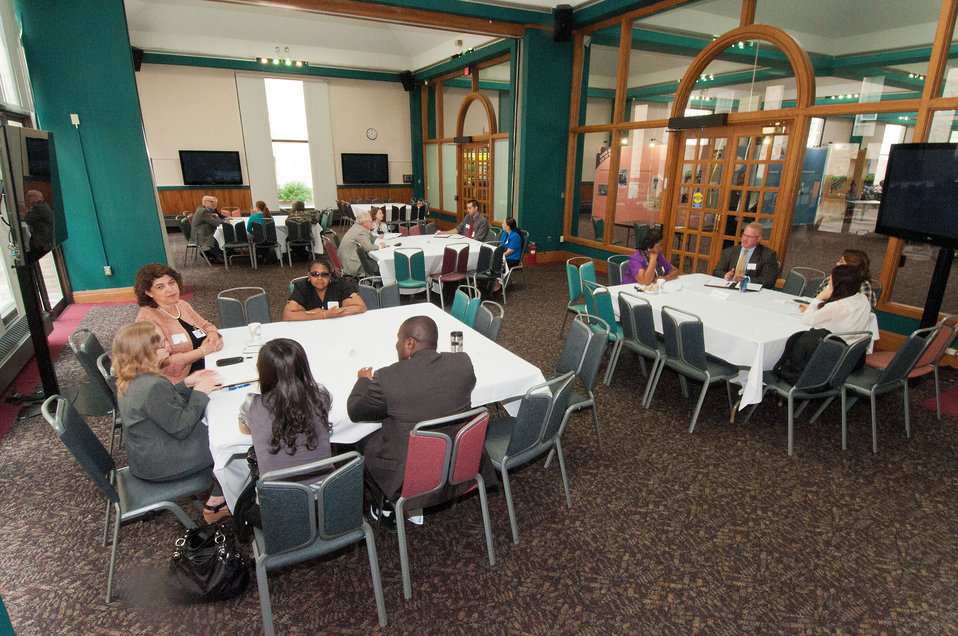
The U.S. Department of Agriculture's (USDA) Office of Human Resources Management (OHRM) held the Virtual University’s Fall Flash Mentoring Event at USDA in Washington, D.C. on Thursday, Sept. 6, 2012.